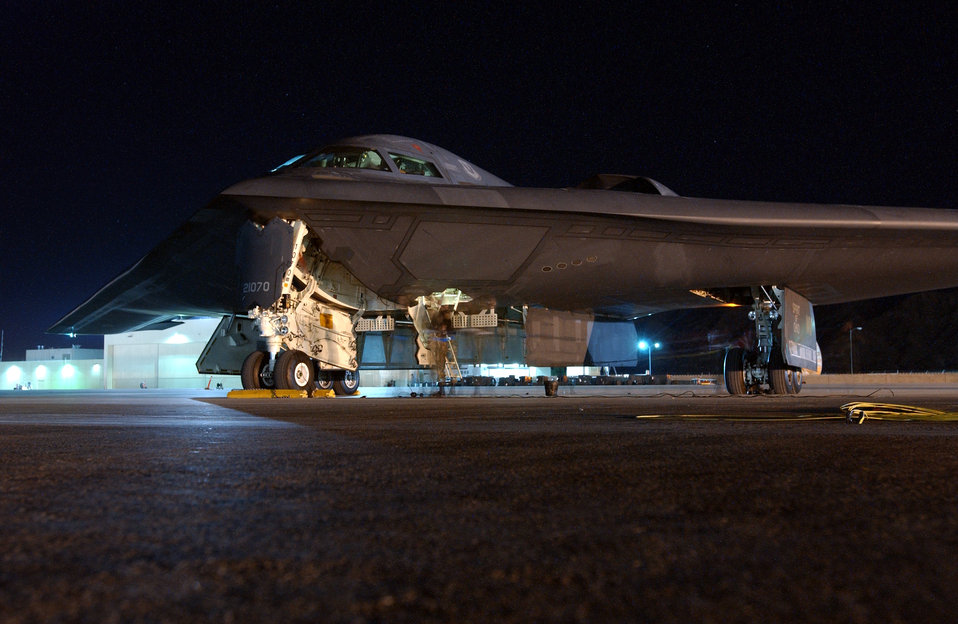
Red Flag

NELLIS AIR FORCE BASE, Nev. -- A B-2 Spirit bomber sits on the ramp here Oct 28. The bomber is from the 509th Bomb Wing from Whiteman Air Force Base, Mo. B-2 aircraft and people from Whiteman were participating in exercise Red Flag 04-01. Red Flags are war exercises that allow combat aircrews training in the most realistic simulated war environment possible.